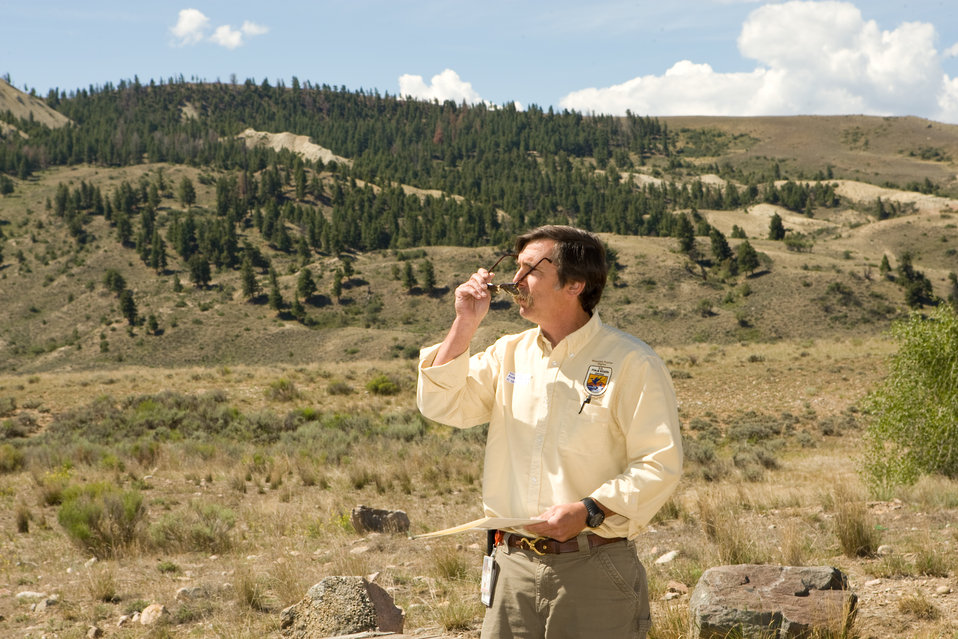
Colorado Rare Planct Conservation Initiative

The Colorado Rare Plant Conservation Initiative (RPCI) is a partnership of 23 statewide and regional agencies, private organizations, and academic institutions working to conserve 121 rare plants in Colorado. As part of these efforts the group developed the Colorado Rare Plant Conservation Strategy, developed Best Management Practices to reduce energy development impacts, addressed climate change, and developed focused strategies for the conservation of individual species at eight priority landscapes. The group has also worked to coordinate volunteer efforts for plant conservation across the state.